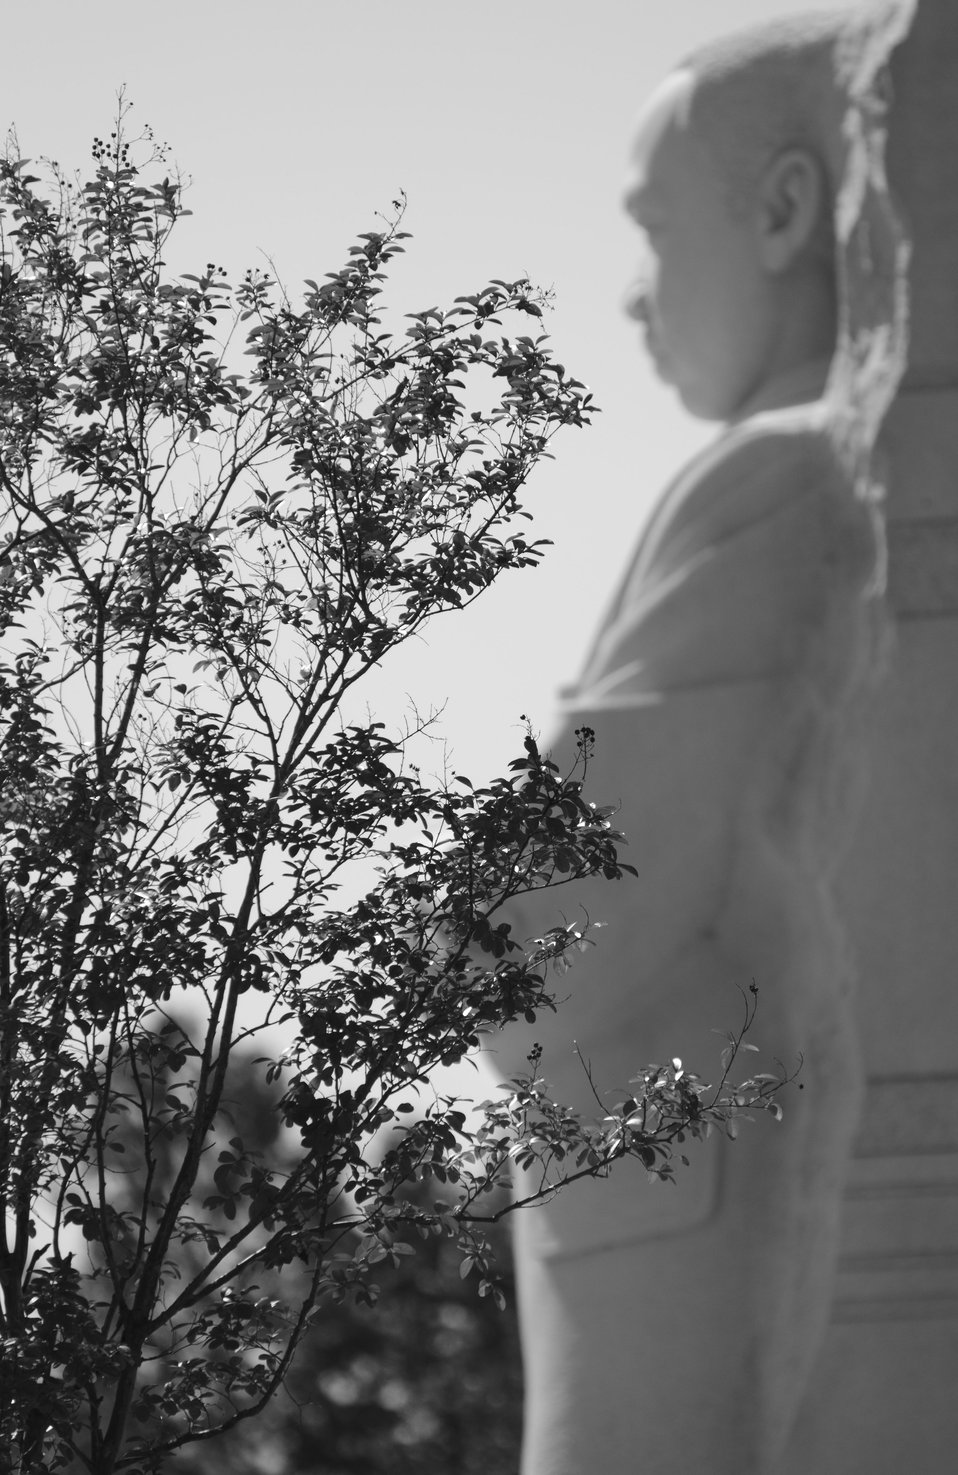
Martin Luther King, Jr. Memorial in Washington, DC, on Saturday, October 8, 2011.